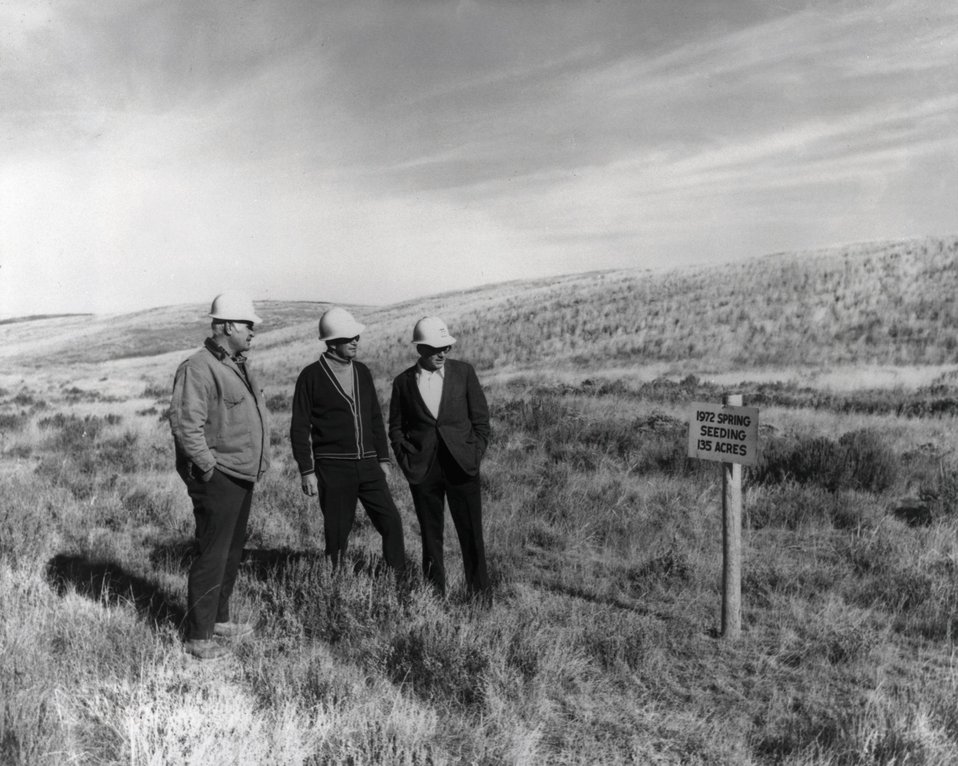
Rolling Hills and grasslands at the Dave Johnson mine north of Glenrock, Wyoming were inspected during a recent visit by Pacific Power Company officials. c. 1976